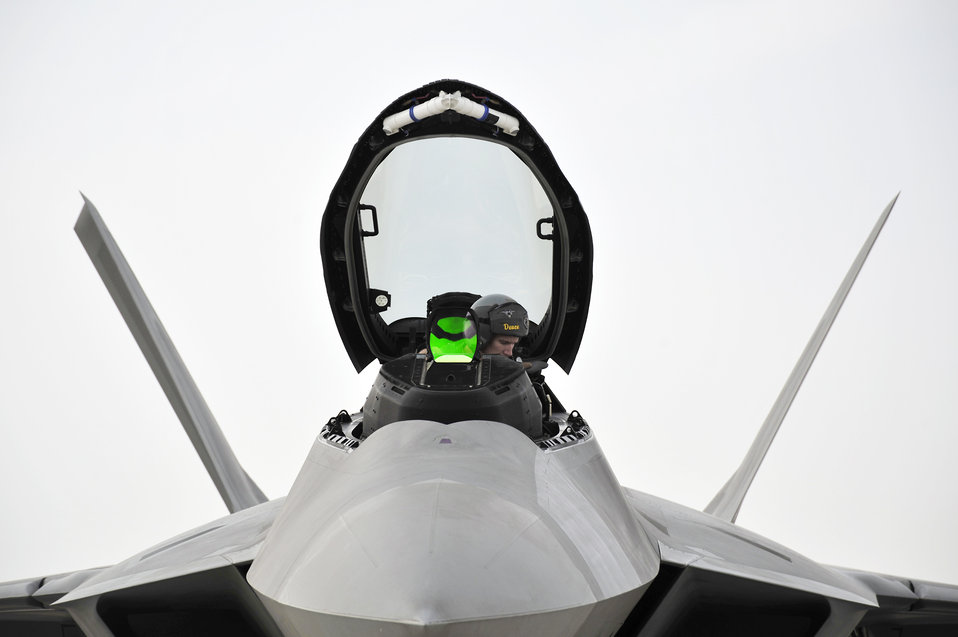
Raptors fly in Iron Falcon

Capt. Blaine Jones, 1st Fighter Wing pilot, checks the cockpit of an F-22 Raptor before closing the canopy Nov. 30, 2009, at an airfield in Southwest Asia. Captain Jones is participating in the Iron Falcon exercise while on temporary duty from Langley Air Force Base, Va. He is from Kingman, Kan.